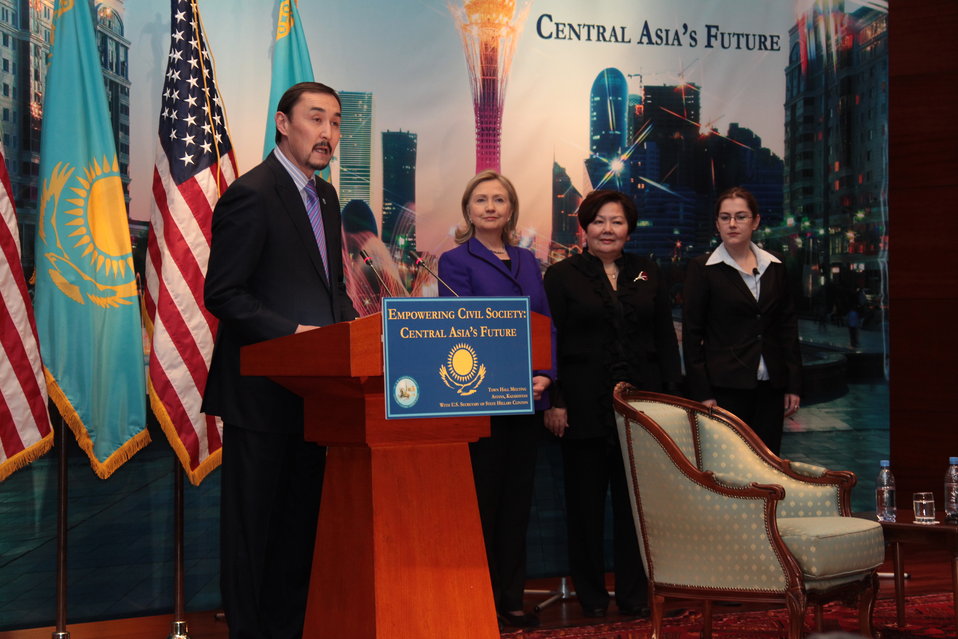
Bakhytzhan Zharylkassymovich Abdraim Welcomes Secretary Clinton

Bakhytzhan Zharylkassymovich Abdraim, the Rector of the Eurasian National University, welcomes U.S. Secretary of State Hillary Rodham Clinton to a town hall on “Empowering Civil Society for Central Asia’s Future” in Astana, Kazakhstan, on November 30, 2010.